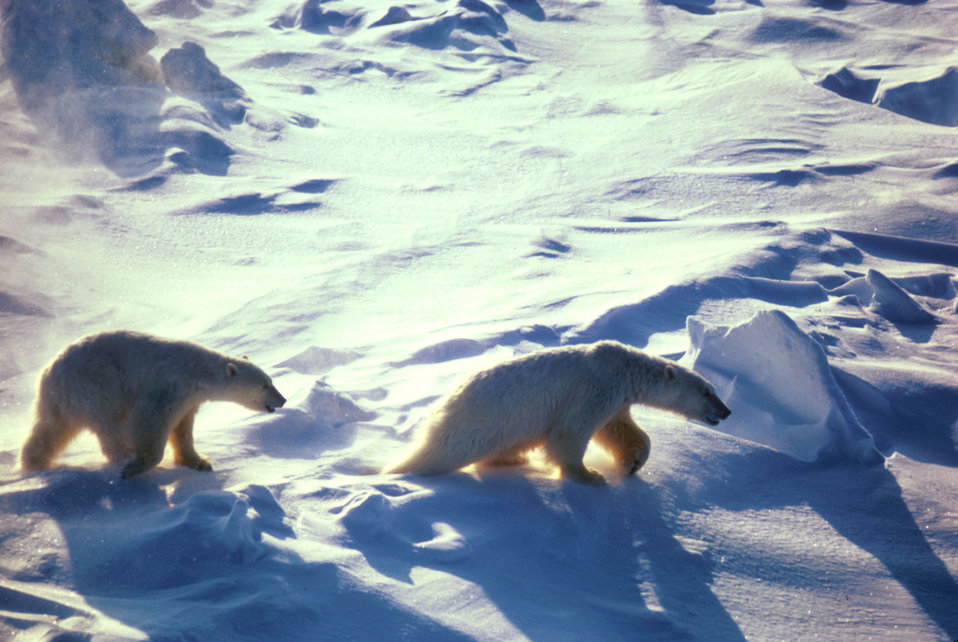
Polar bears traverse a frozen landscape.